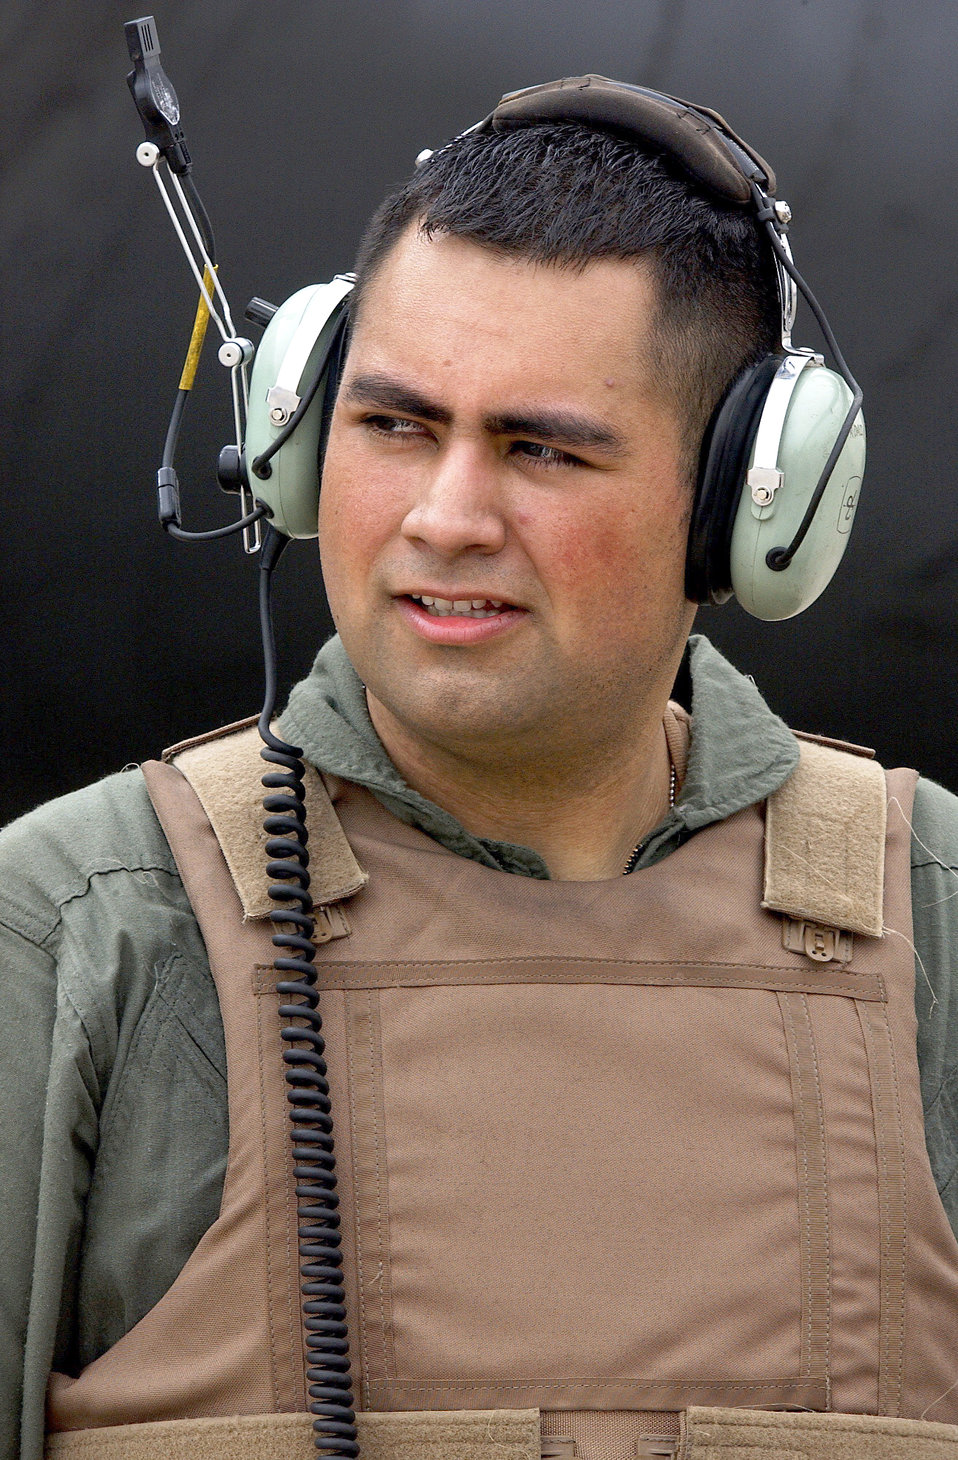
Iraqi Freedom

BALAD AIR BASE, Iraq -- Senior Airman Jesus Ordaz takes a second to relax after conducting a preflight inspection on a C-5 Galaxy here March 6. Airman Ordaz is a crew chief with the 332nd Air Maintenance Squadron.